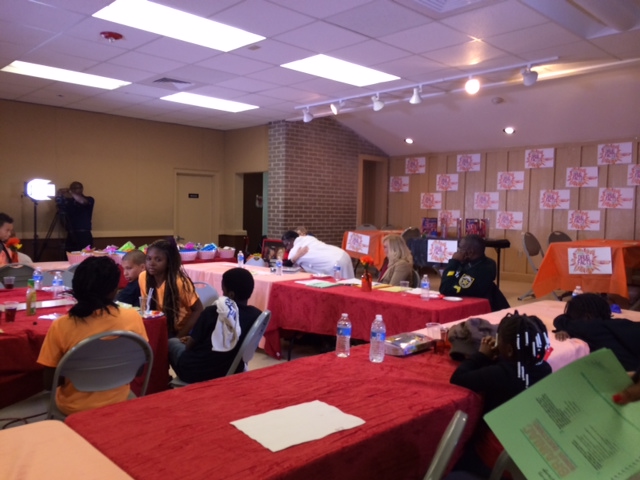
Orlando Teens hold NDFW Event

Teens from Orlando, Florida are 'Shattering the Myths' during the 2014 National Drug Facts Week at Orlo Vista Park.